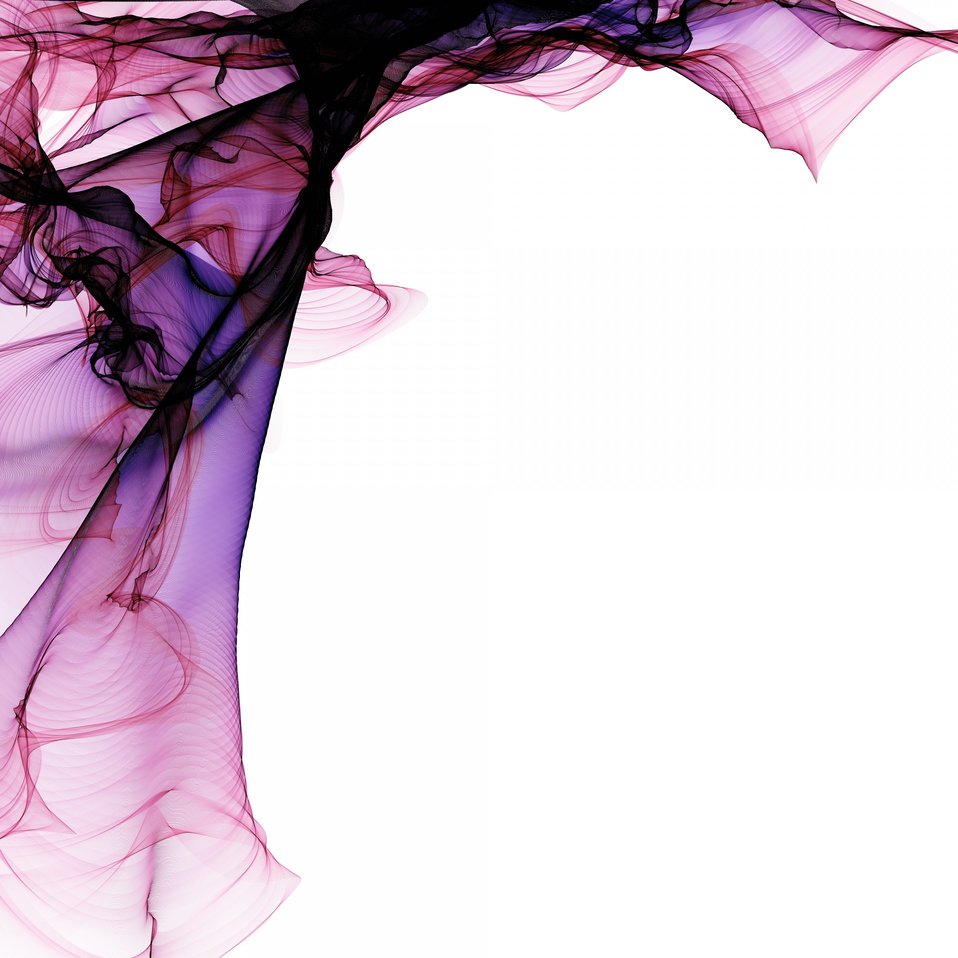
Pink lace ribbon border

Digitally created abstract page border resembling lace ribbon..